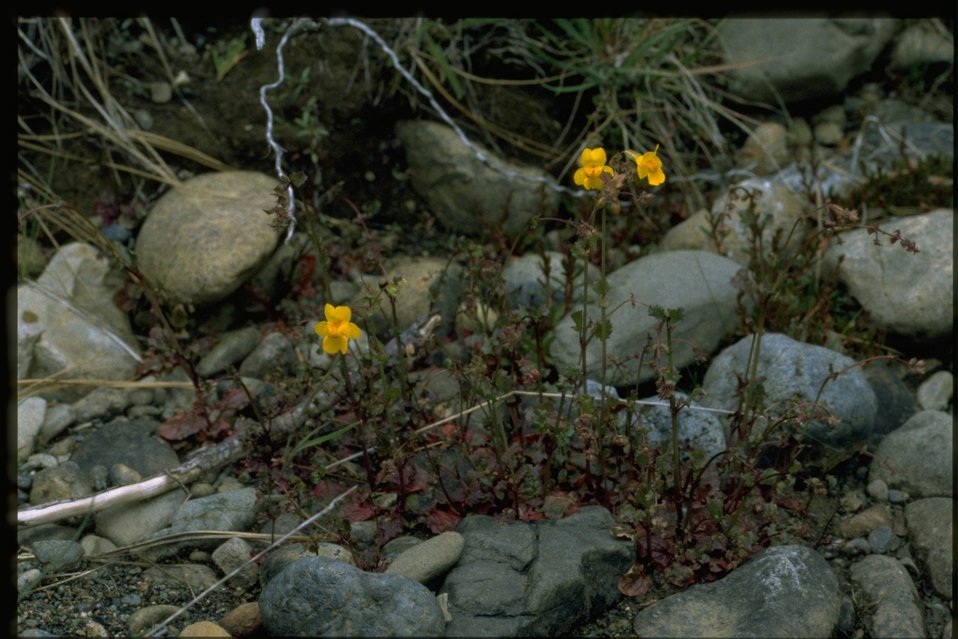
Farshot of Mimulus guttatus.